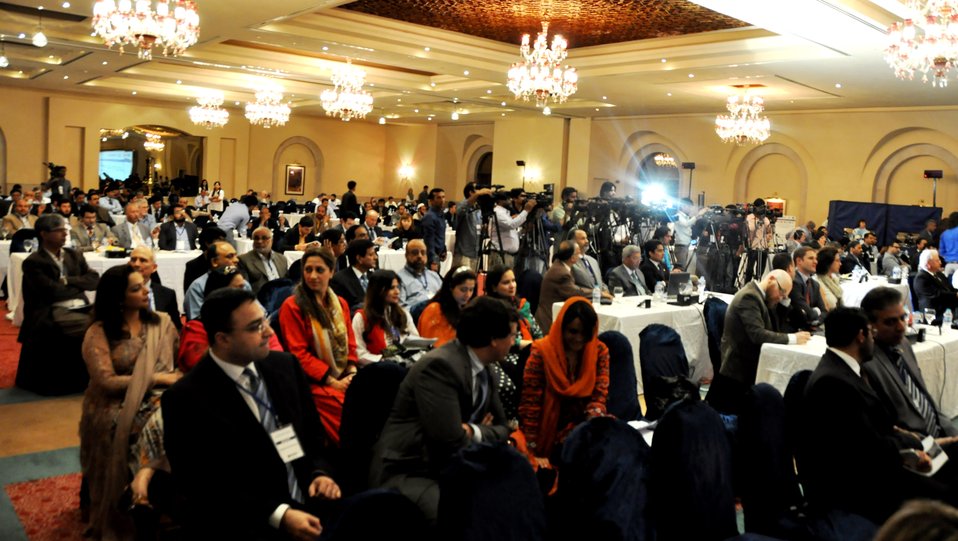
Central Asian Business Opportunities Conference

More than 250 private and public sector participants from Pakistan, Afghanistan, and the Central Asian Republics of Kazakhstan, Kyrgyzstan, Turkmenistan, Tajikistan, and Uzbekistan came together to seek new business opportunities and pursue greater regional coordination of trade and investment.